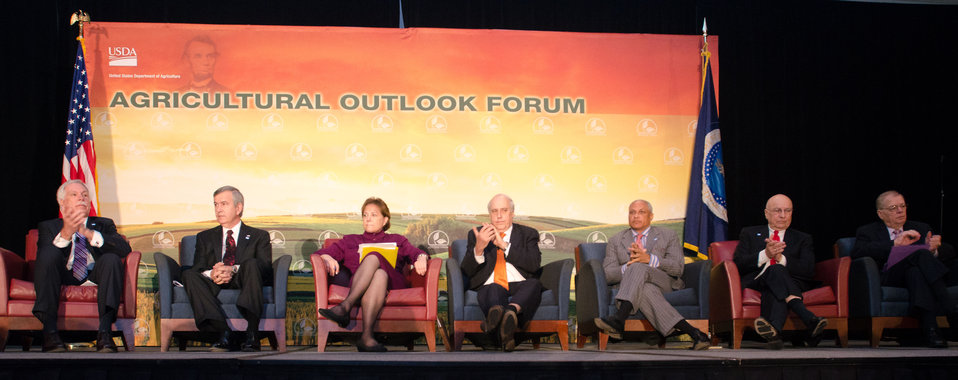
At the 2012 Agricultural Outlook Forum, “Moving Agriculture Forward” in Arlington, VA, held on Thursday, February 23, 2012, 7 former Secretaries of Agriculture sat on the plenary panel “Visions of the Future” hosted by current Agriculture Secretary Tom Vilsack (L to R Governor Ed Schafer (ND), Senator Mike Johanns (NE), Ann Veneman, Congressman Dan Glickman (KS), Congressman Mike Espy (MS), Clayton Yeutter, and John Block).